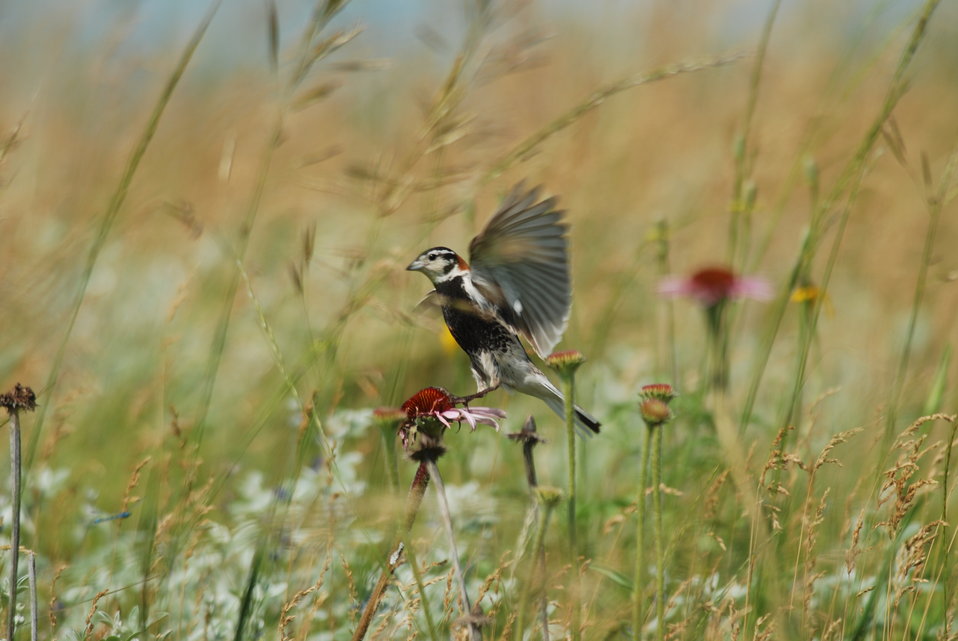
Chestnut-Collared Longspur landing in Canada. Supported by the Neotropical Migratory Bird Conservation Act. Credit: WCS

Note: This photo was taken in Canada. Flickr geolocation point is incorrect. Specific location unknown.